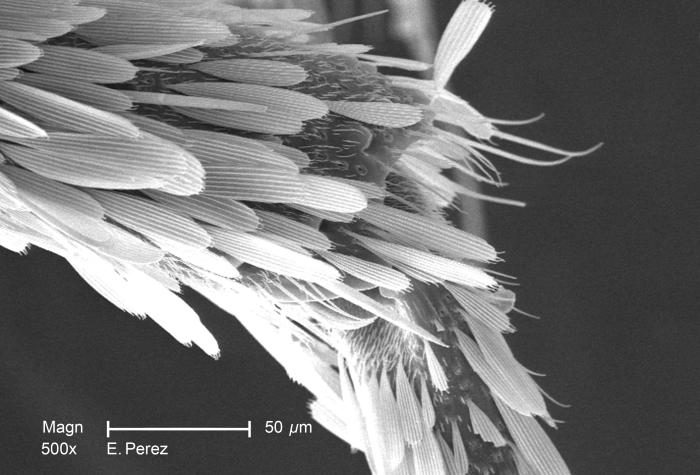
Under a moderately high magnification of 500X, this scanning electron micrograph (SEM) depicted some of the exoskeletal details found at one of the leg joints of an unidentified mosquito discovered in the suburbs of Decatur, Georgia. The exoskeleton, or outer surface of this arthropod, affords it with support and mobility, as well as organs specialized in sensorial acquisition. In this particular view, you'll note a numerous small setae, or 'hairs', and striated scales that assist in both the act of flight, and thermoregulation of the insect's bodily temperature.